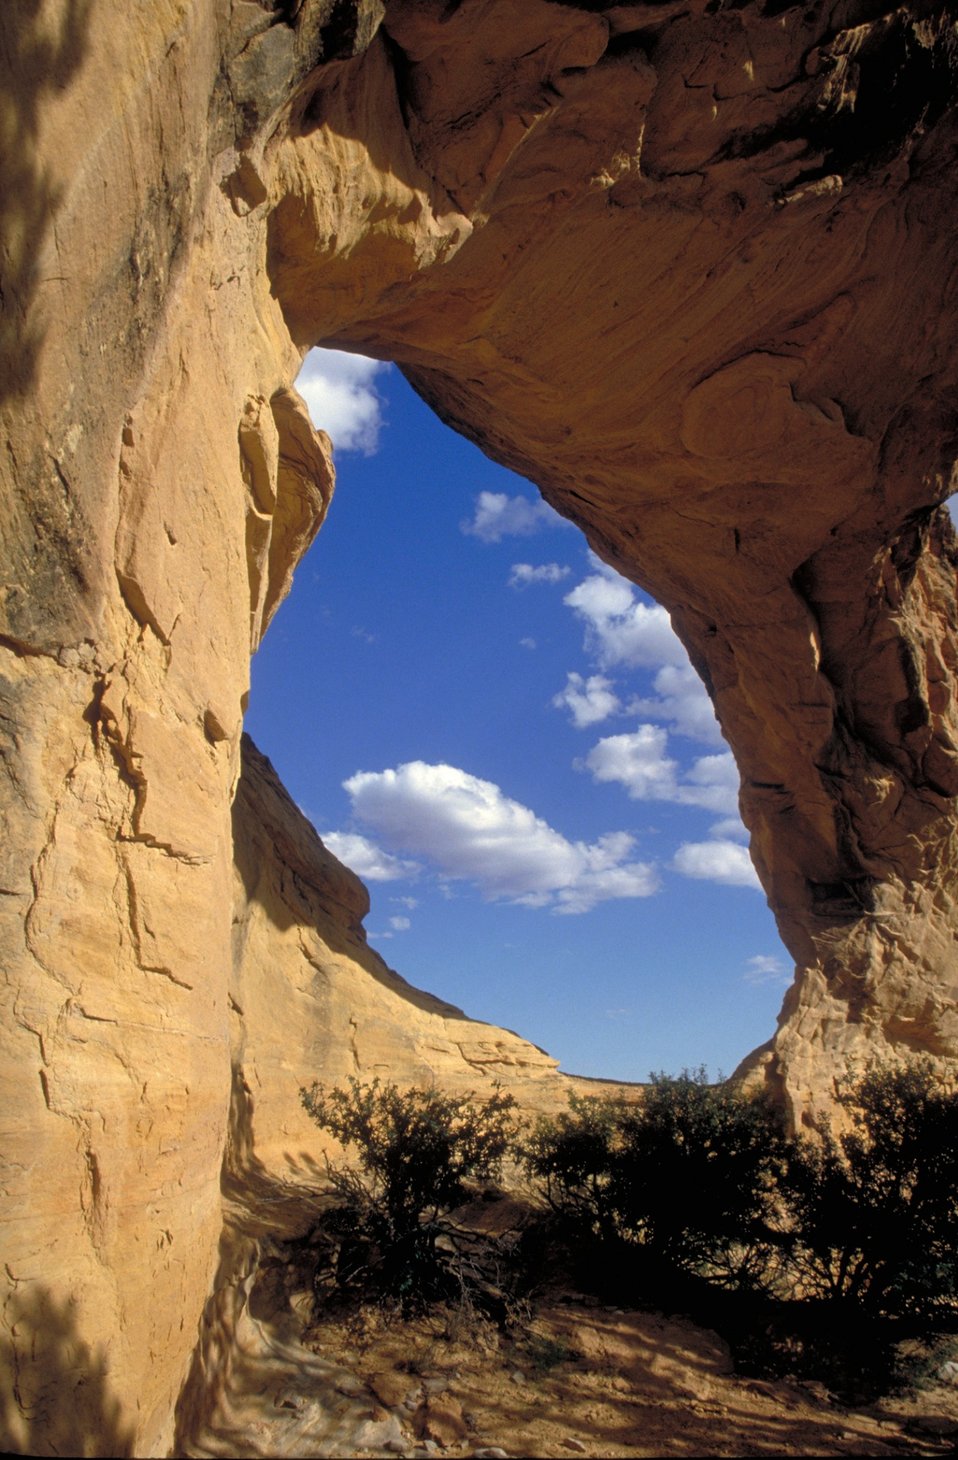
Dutchmans Arch, Head of Sinbad in the San Rafael Swell,